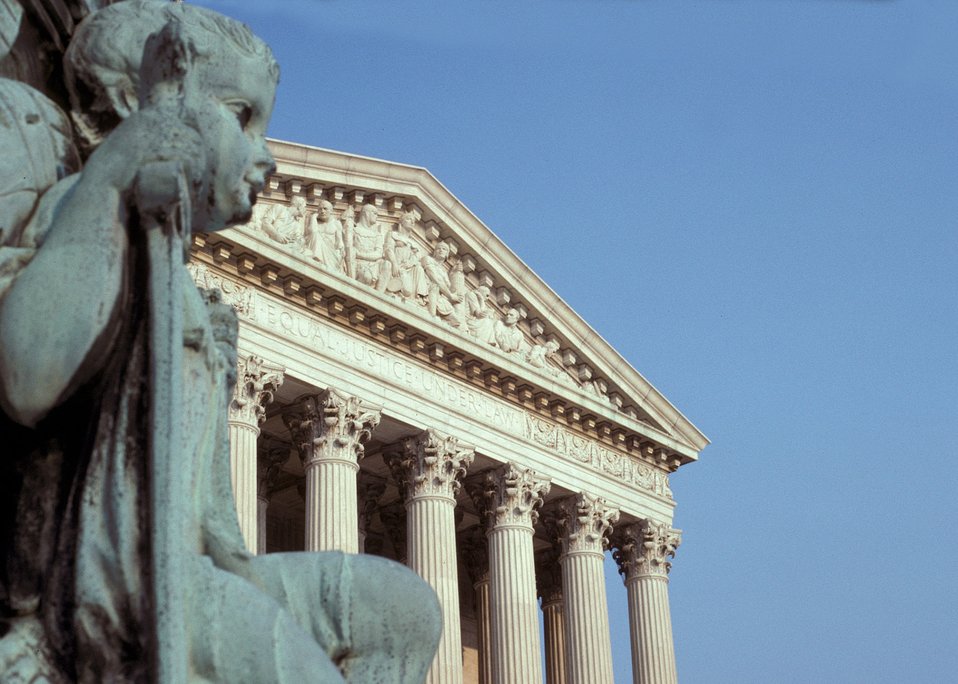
U. S. Supreme Court Building in Washington DC.